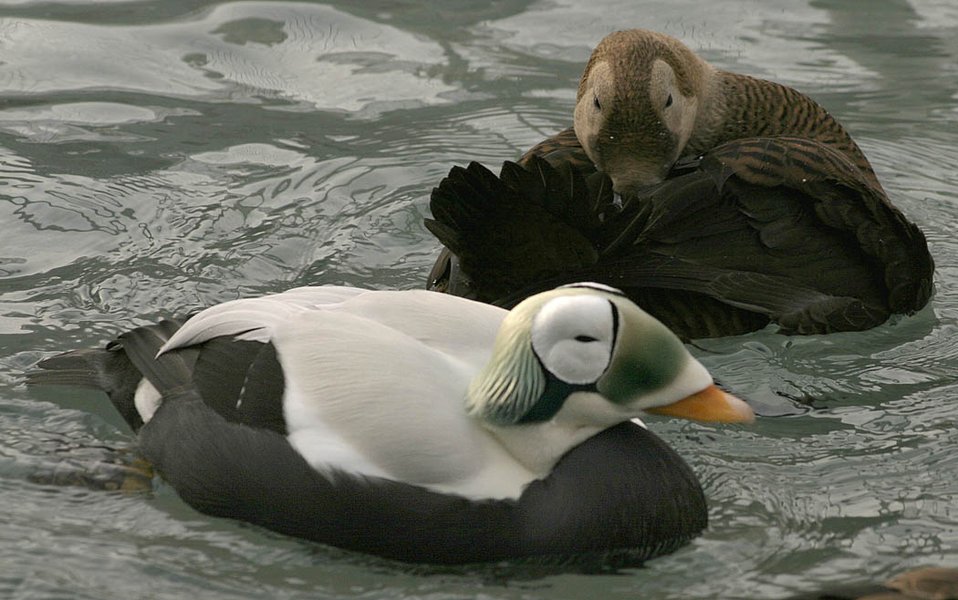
Threatened spectacled eider male and female (Somateria fischeri), Alaska SeaLife Center, Seward, Alaska